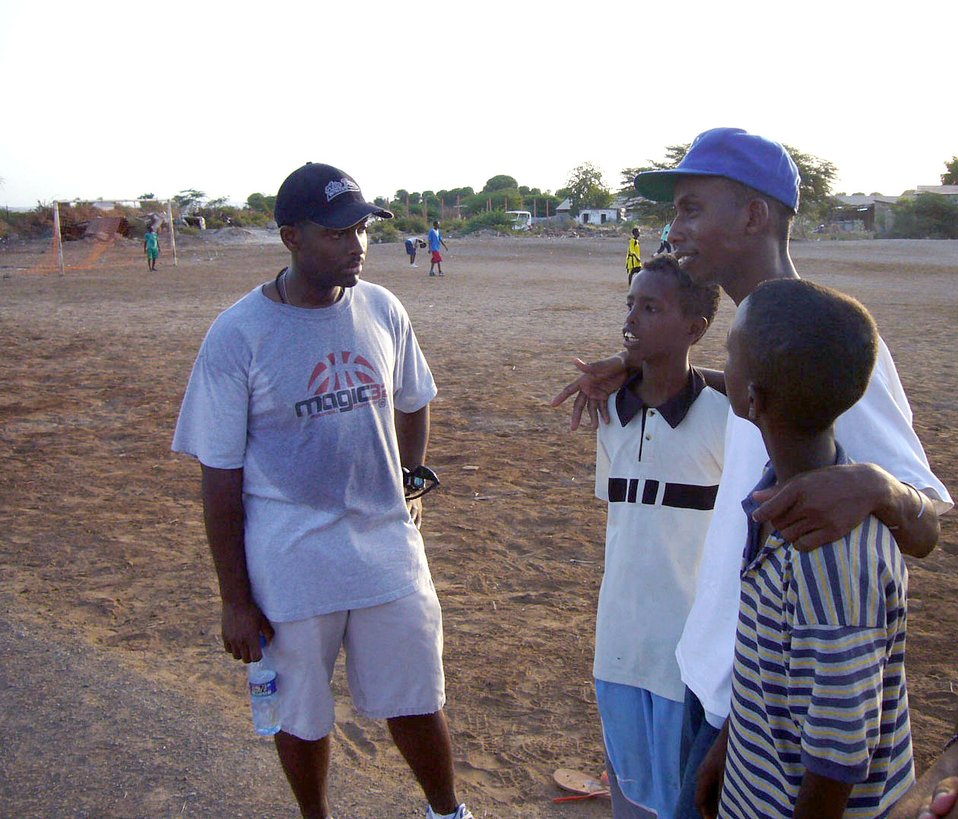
Task Force members visit African orphanages

Air Force Capt. Brian Brasher speaks with Mohammed and two children at a boys' orphanage in Djibouti, Africa, May 15, 2006. Servicemembers assigned to Combined Joint Task Force-Horn of Africa regularly visit local orphanages to share experiences and spend time with the children.